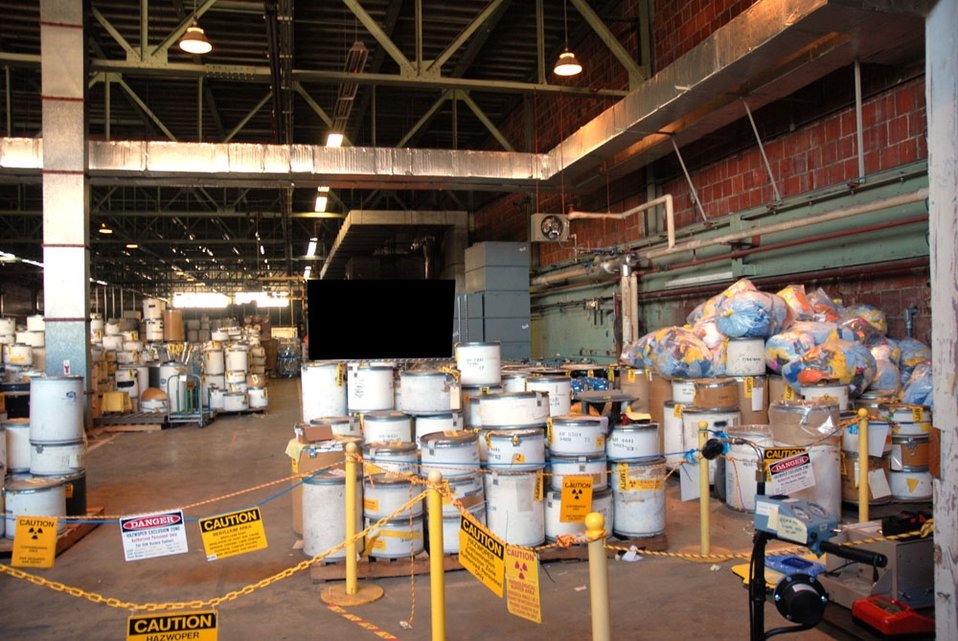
Workers Complete Y-12’s Largest Recovery Act Project Ahead of Schedule

The Y-12 National Security Complex (Y-12)
celebrated the early completion of its largest Recovery Act funded project, emptying all legacy material from Alpha 5. The cleanout of the 613,000-square-foot facility was completed at a cost of about $100 million one month ahead of schedule. Built in 1944, Alpha 5 is the largest building at Y-12, and was formerly used for uranium separation activities.